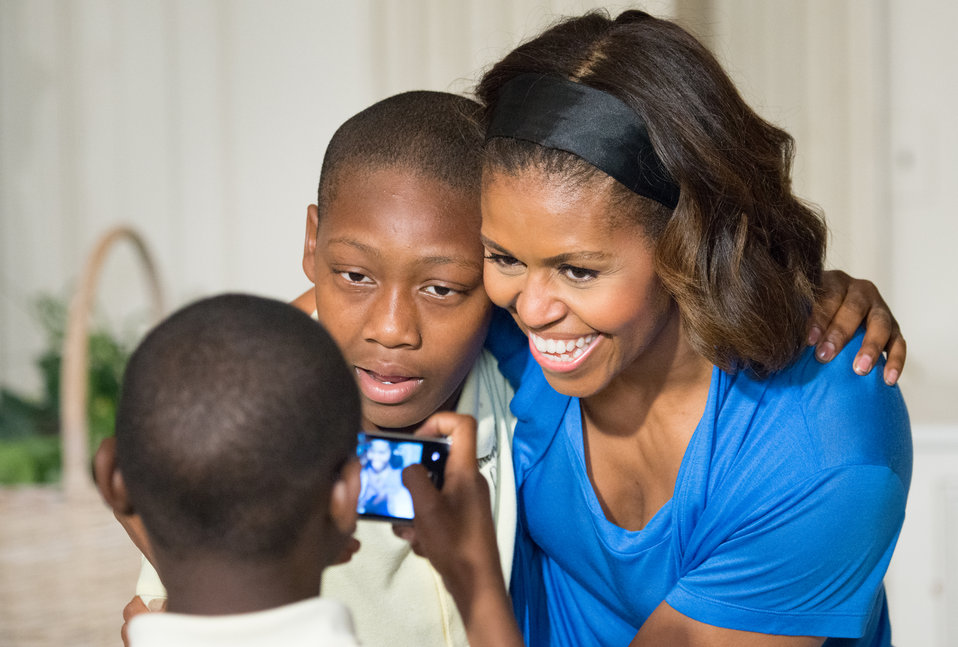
First Lady Michelle Obama speaks to Cleveland Elementary student Prim Shepard Jr. and Bancroft Elementary student
Silas Stutz in the State Dining Room of the White House in Washington, D.C. on Thursday, Jun. 12, 2014. The students, who helped plant the garden in the spring, made lunch from this year’s summer crop with the help of White House chefs and visiting school nutrition directors from Orlando, FL, Dallas, TX, and West Virginia USDA photo by Lance Cheung.